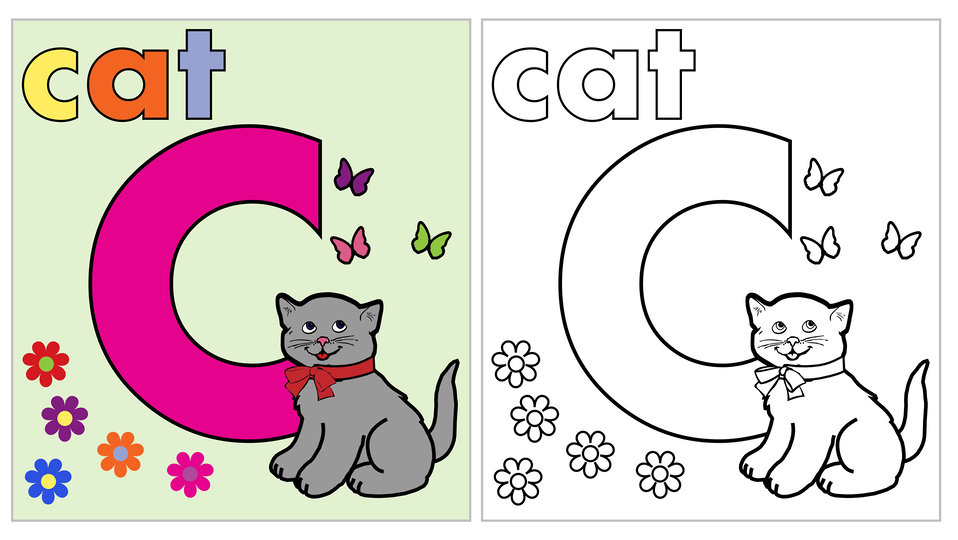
Cat coloring page letter c

Cute cat, kitten, alphabet letter c coloring book page.